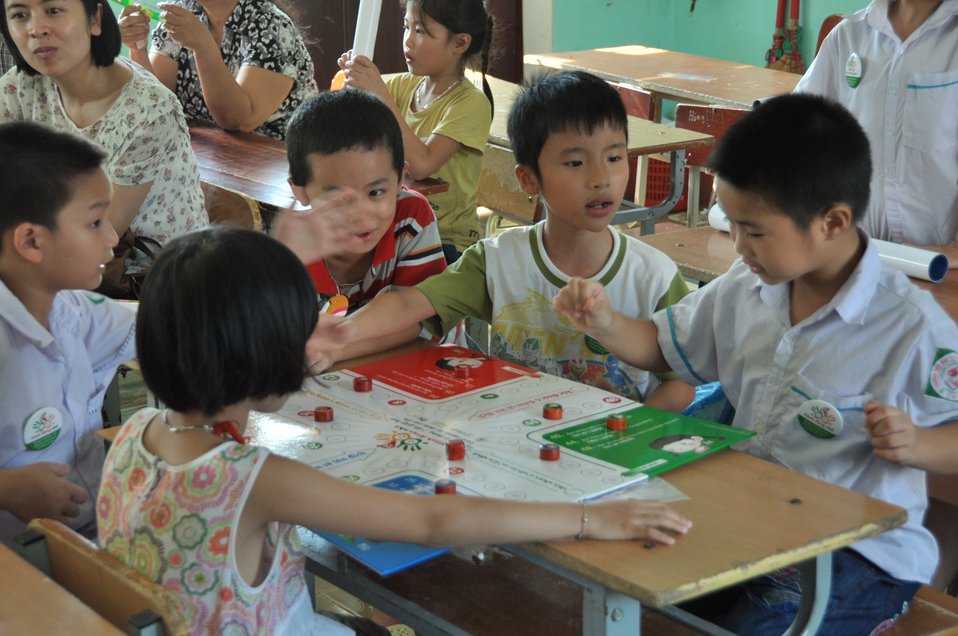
USAID supports deworming education and medication distribution in Bac Giang Province

May 20, 2013